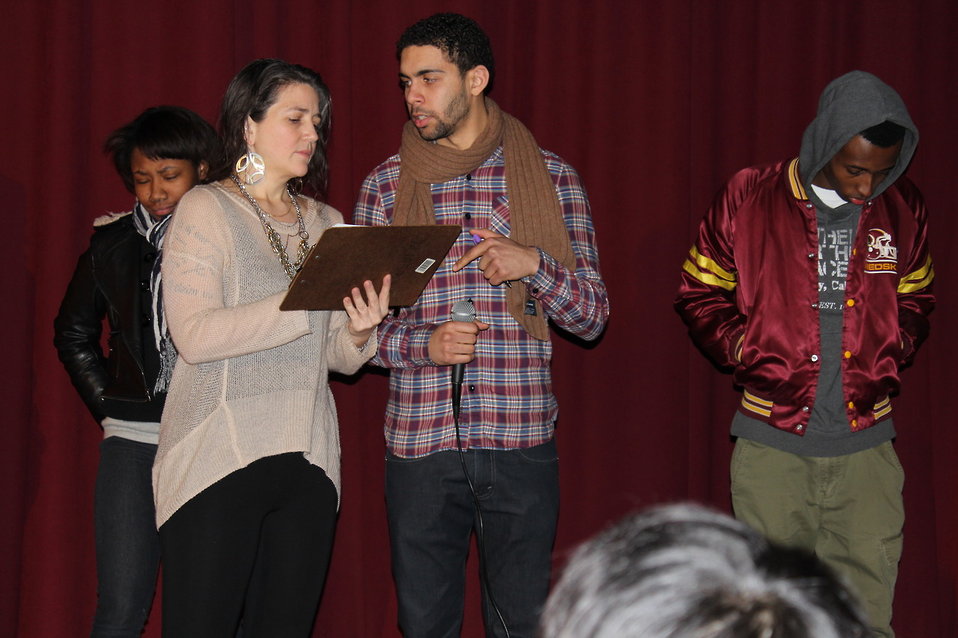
Youth Empowerment Program Poetry Slam held Youth Empowerment Program Poetry Slam held at Alternative

Youth Empowerment Program Poetry Slam held at Alternatives on Jan. 30 which was held to observe National Drug Facts Week and support youth in making healthy lifestyle choices.